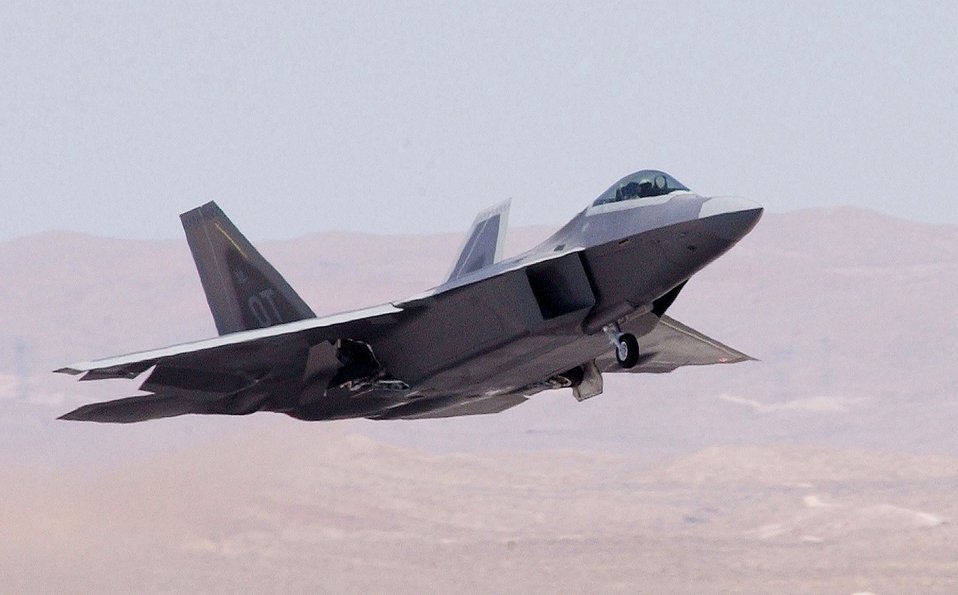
Raptor releases JDAM during first 'follow-on' evaluation mission

NELLIS AIR FORCE BASE, Nev. -- An F/A-22 Raptor takes off from here for a mission. During a two-ship sortie, Airmen from the 422nd Test and Evaluation Squadron flew the first Follow-on Operational Test and Evaluation mission on the F/A-22 Raptor on Aug. 29, releasing Joint Direct Attack Munitions on the Utah Test and Training Range.